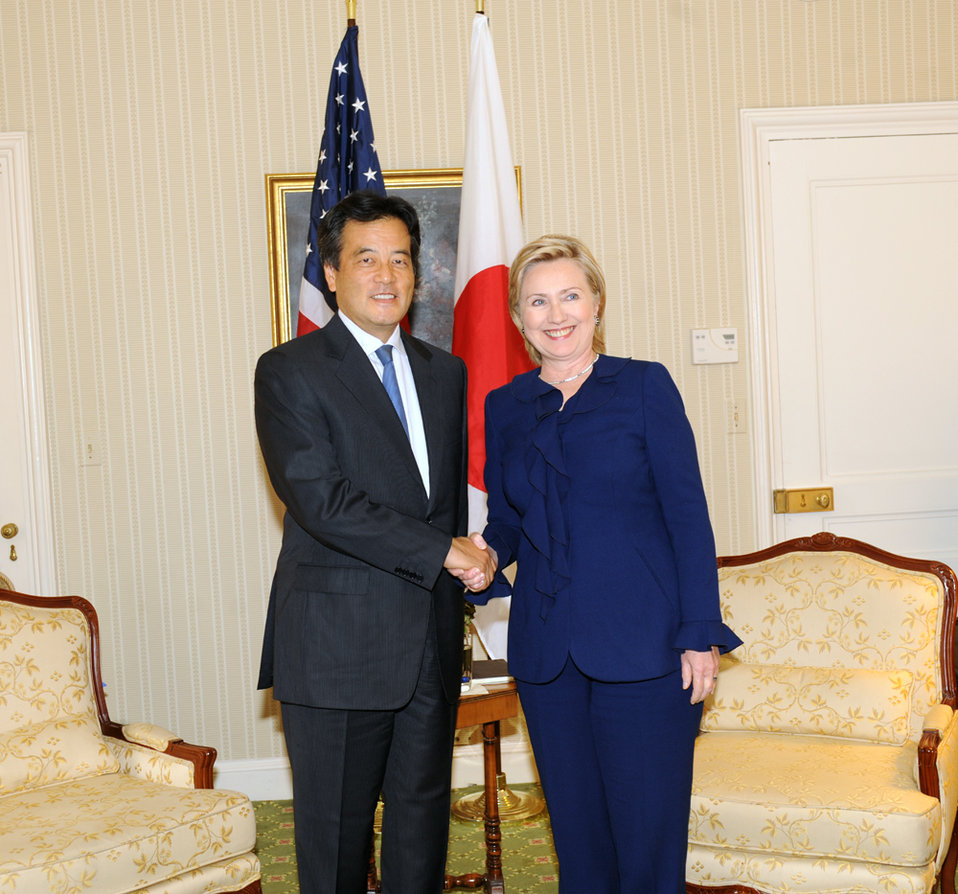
UNGA 2009: Secretary Clinton Meets With Japanese Foreign Minister

U.S. Secretary of State Hillary Rodham Clinton meets with Japanese Foreign Minister Katsuya Okada at the Waldorf Astoria hotel during the 64th Session of the UN General Assembly in New York City, New York September 21, 2009.